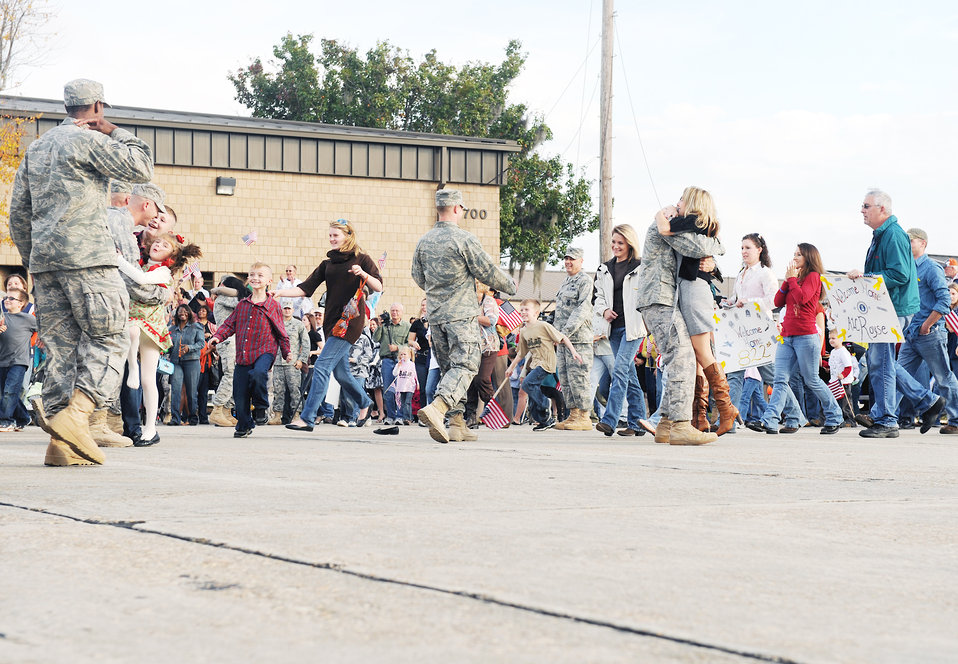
Welcome back!

Families and friends run to greet Airmen returning from a deployment Dec. 8, 2009, at Moody Air Force Base, Ga. The 822nd Security Forces Squadron Airmen were deployed to Camp Bucca, Iraq, and during the deployment, the squadron performed joint expeditionary taskings,outside-the-wire security operations and convoy escort.